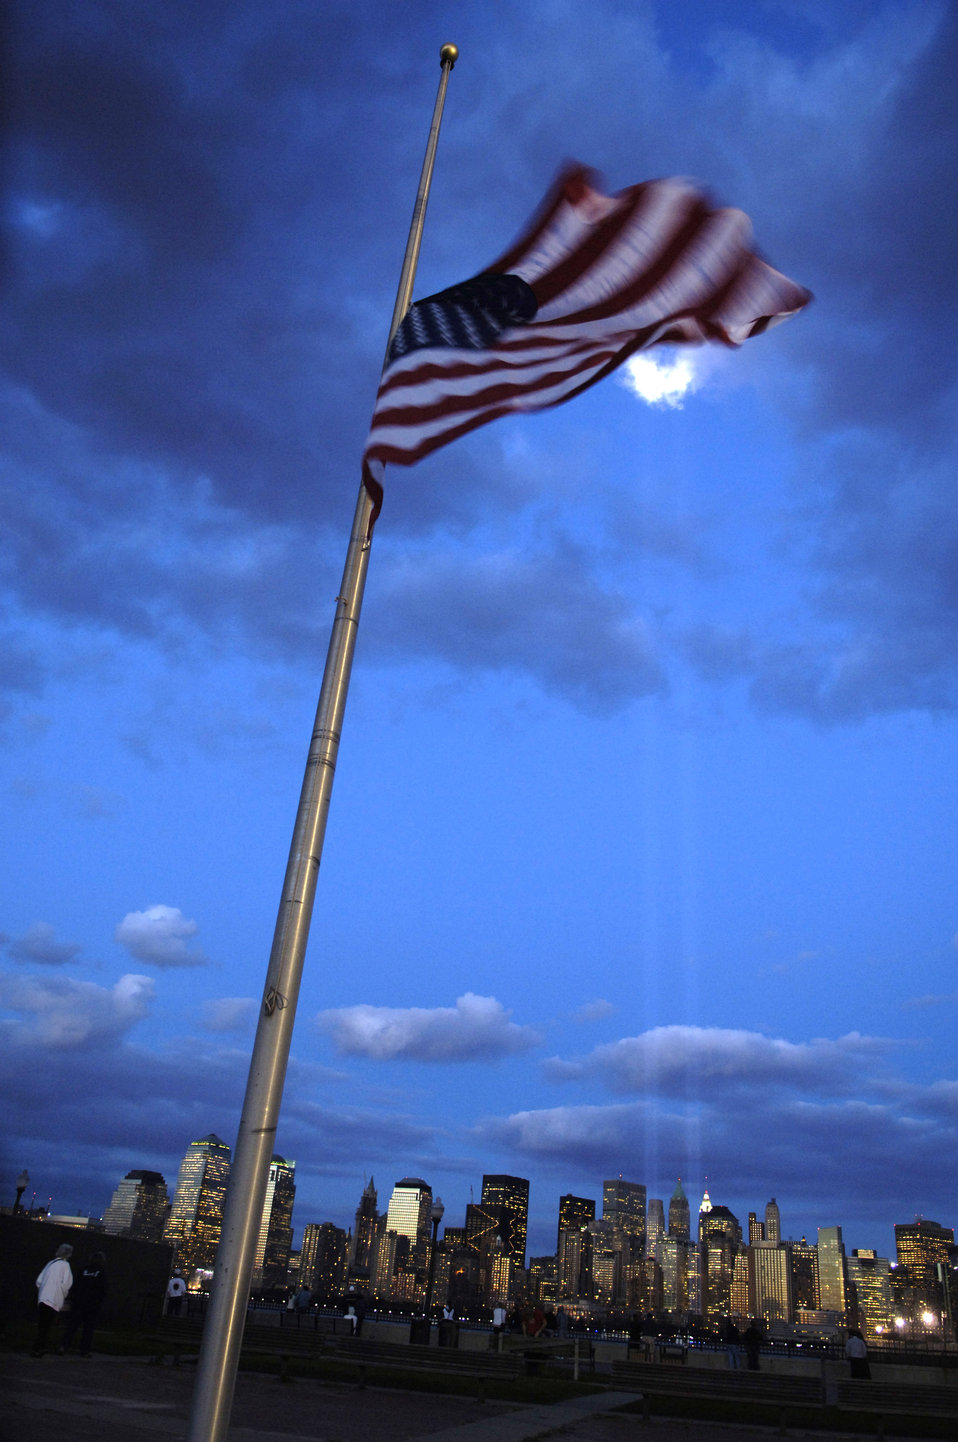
Tribute in Light

An American flag waves in the wind with the